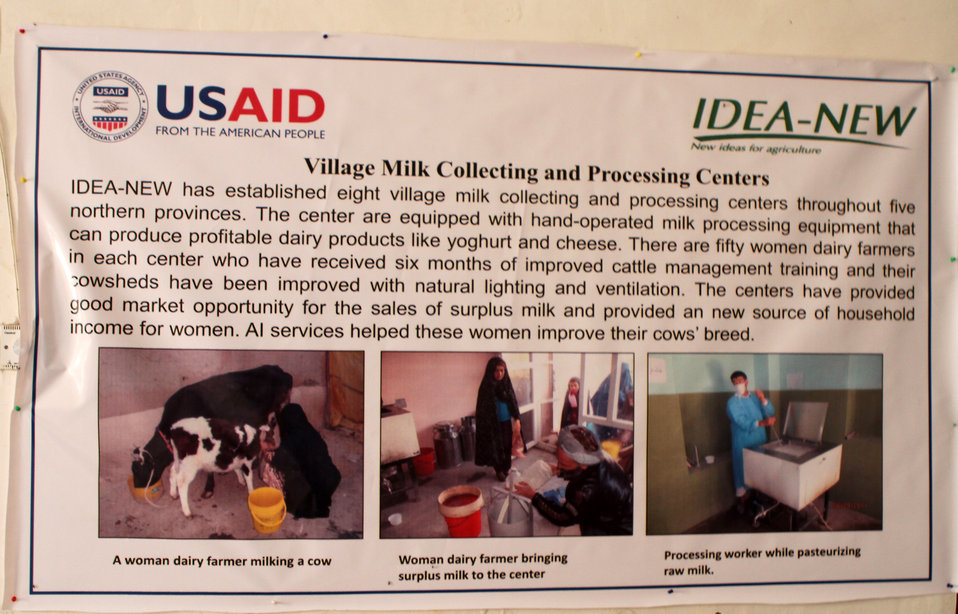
USAID funded Milk Processing Center